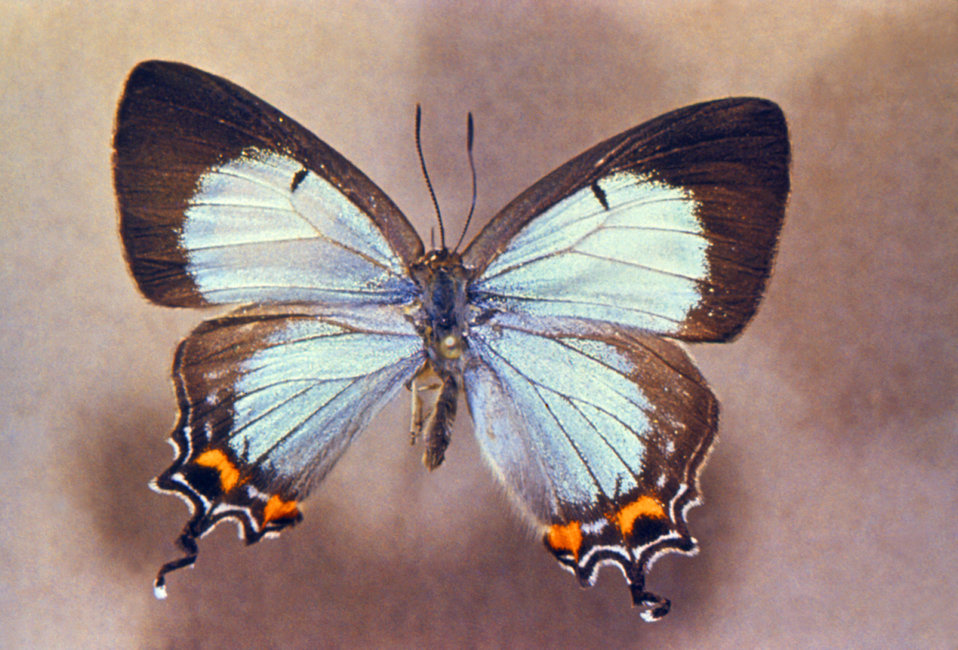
This photograph of a butterfly was taken during a 1972 study of disease carriers, and pests of migrant labor camps.